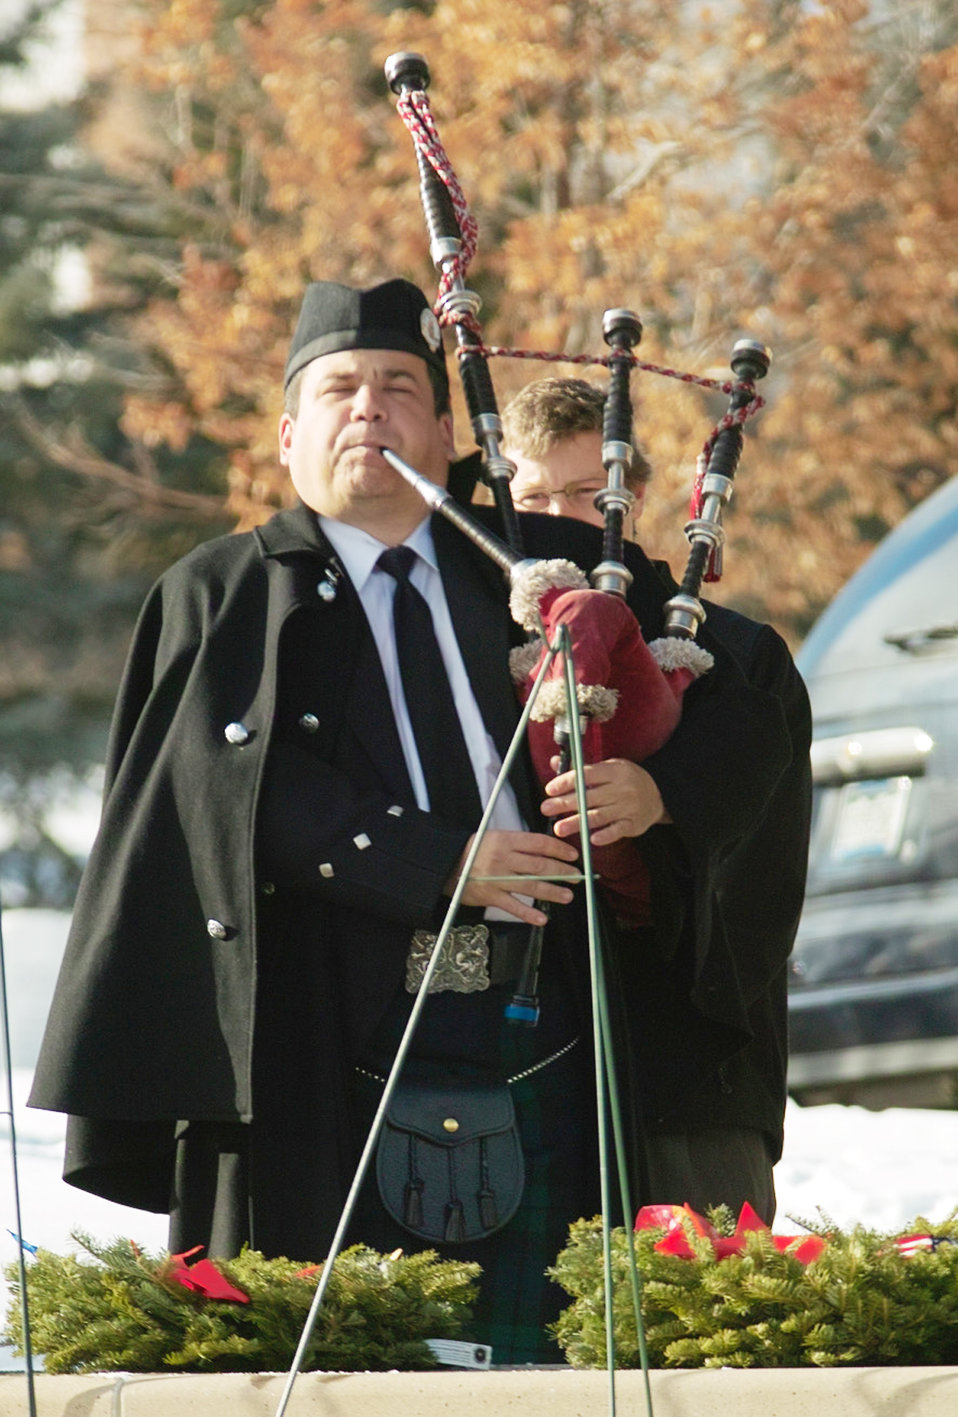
Volunteers honor veterans with wreaths

A bagpiper from the Scottish American Military Society plays during the ceremony Dec. 14, 2009 at Fort Logan National Cemetery, Colo. SAMS members honored the veterans while braving the 35-degree temperatures in traditional Scottish kilts.